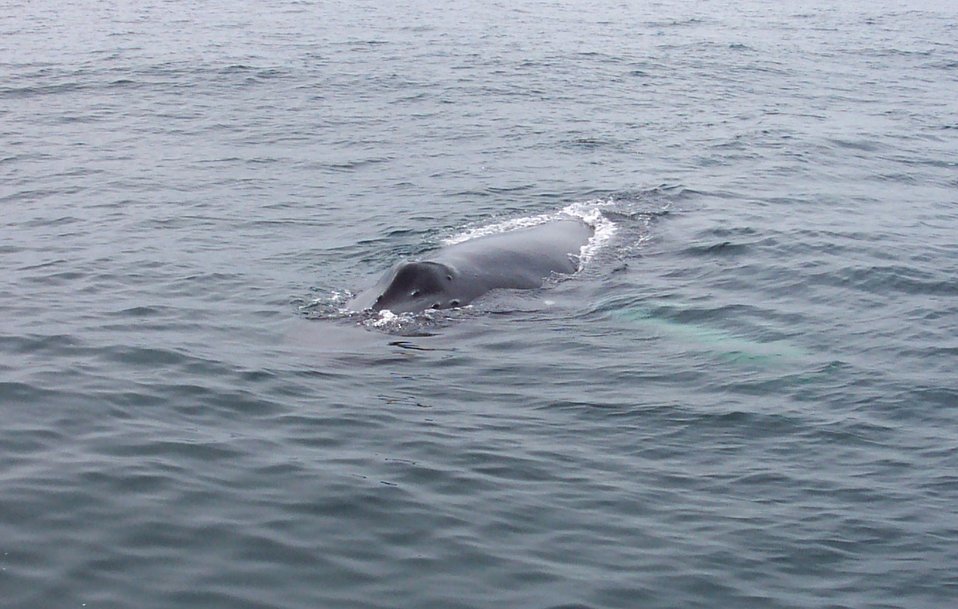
A humpback whale in the Gulf of Maine about 20 miles south of Bar Harbor.